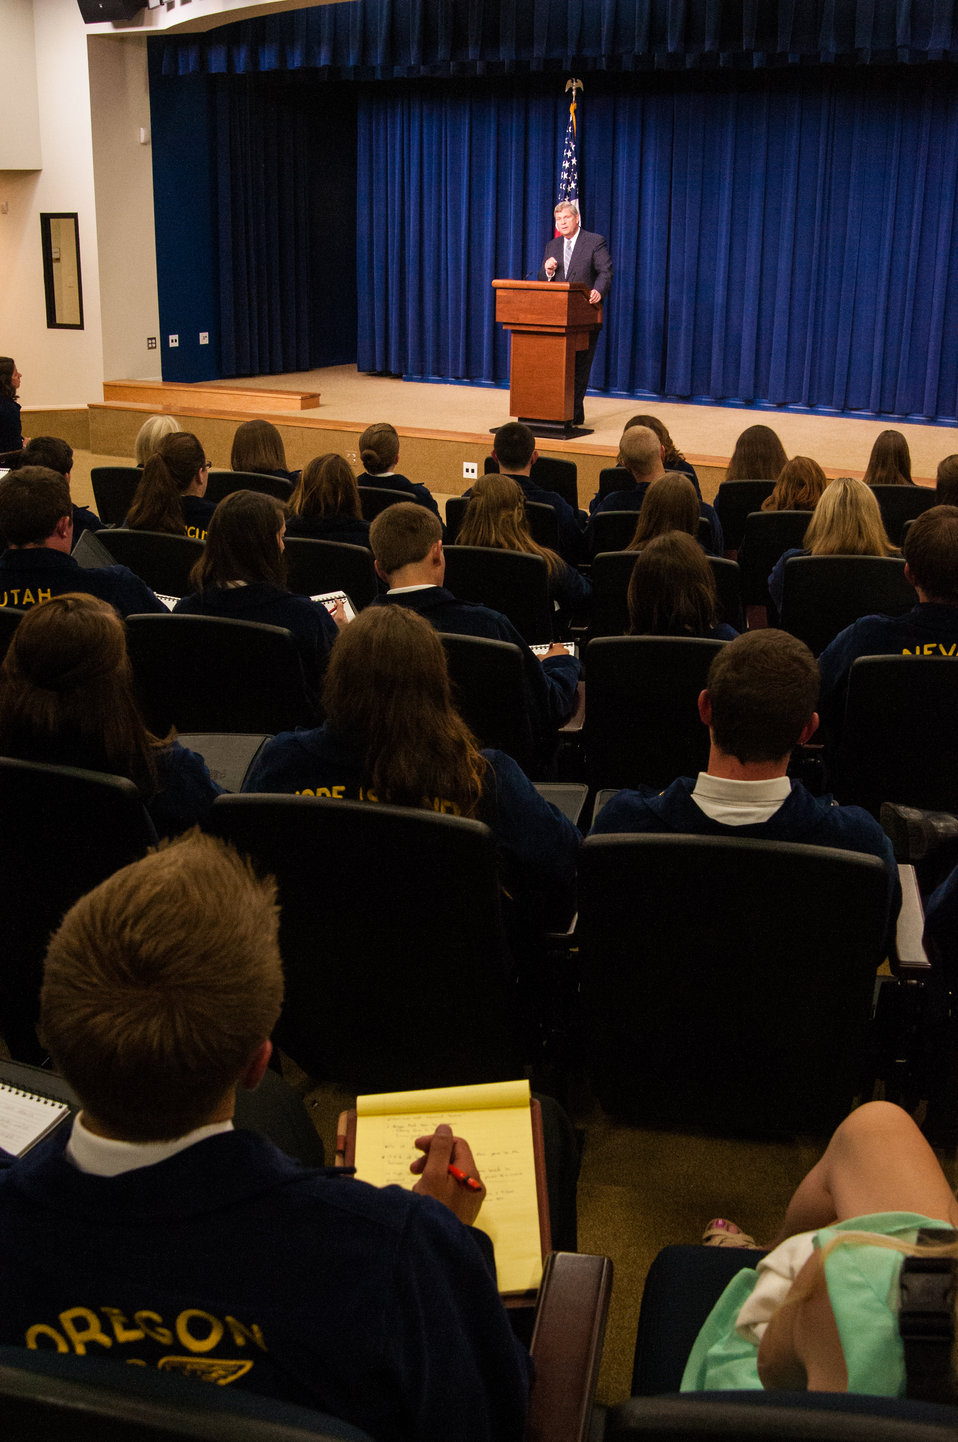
Agriculture Secretary Tom Vilsack speaks at a meeting of the White House Rural Council to an audience of the National State President’s Conference of the FFA on Wednesday, Jul. 24, 2013 in Washington, D.C. Secretary Vilsack took questions from the audience and discussed international, national and agricultural production topics with the FFA State President’s.